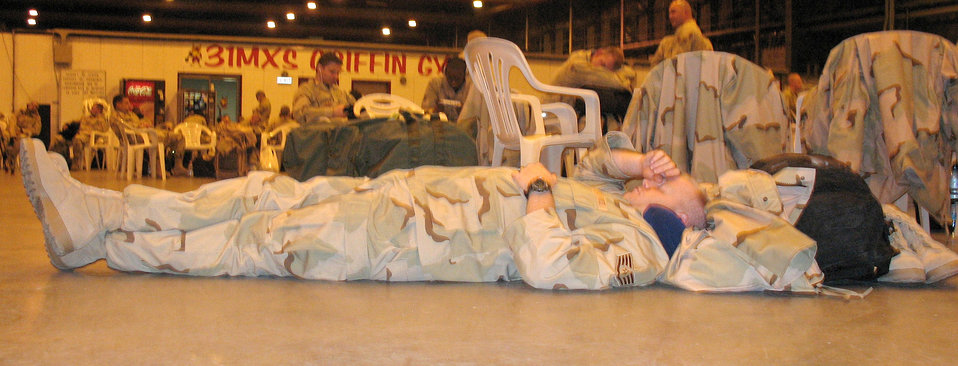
Deploying Airmen wait in Italy through six-day layover

Staff Sgt. James Ward rests at Hangar One while waiting for transportation to a forward-operating location in support of Operation Iraqi Freedom Jan. 18 at Aviano Air Base, Italy. Sergeant Ward is assigned to the 15th Civil Engineer Squadron from Hickam Air Force Base, Hawaii.